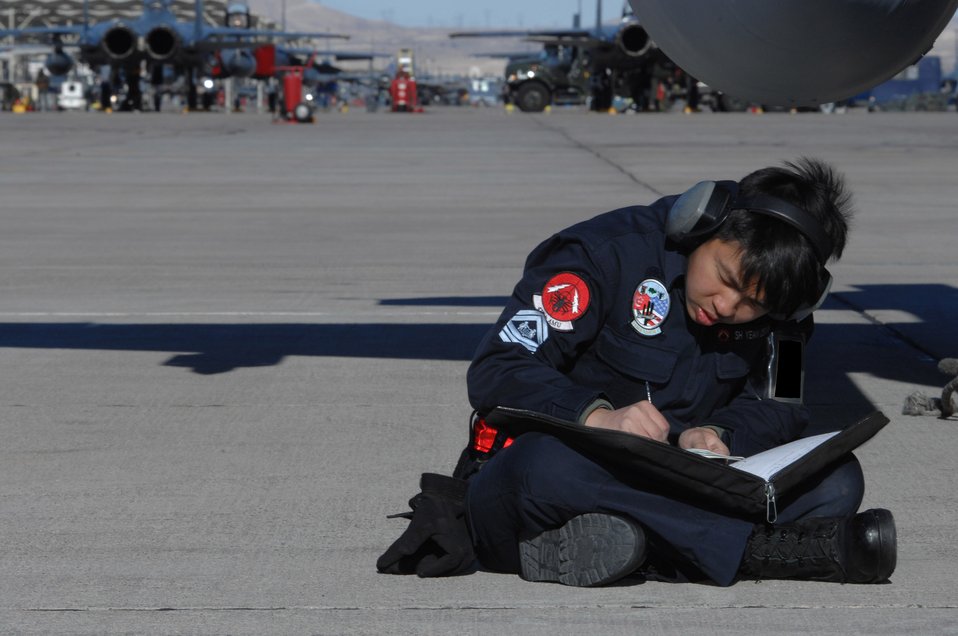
Red Flag 08-2.1

SSG Oswin Yean annotates aircraft maintenance performed during exercise Red Flag 08-2.1 at Nellis Air Force Base, Nev. Jan. 17. Red Flag is a two week long multi-national exercise providing a realistic environment to practice combat scenarios. The experience gained during the exercise is vital to the survival of pilots in combat. SSG Yean is with the Singapore air force.